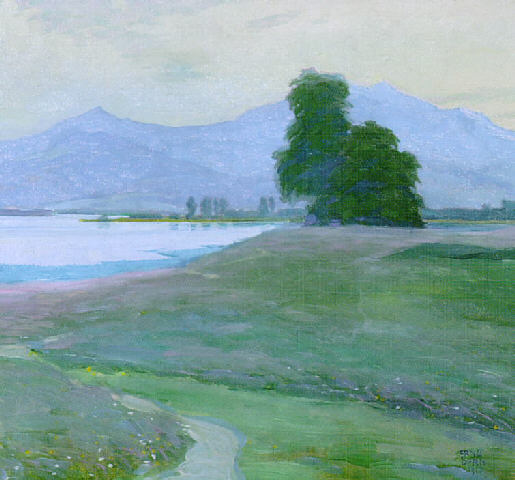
Chiemsee. Öl auf Leinwand, 55 x 60 cm.